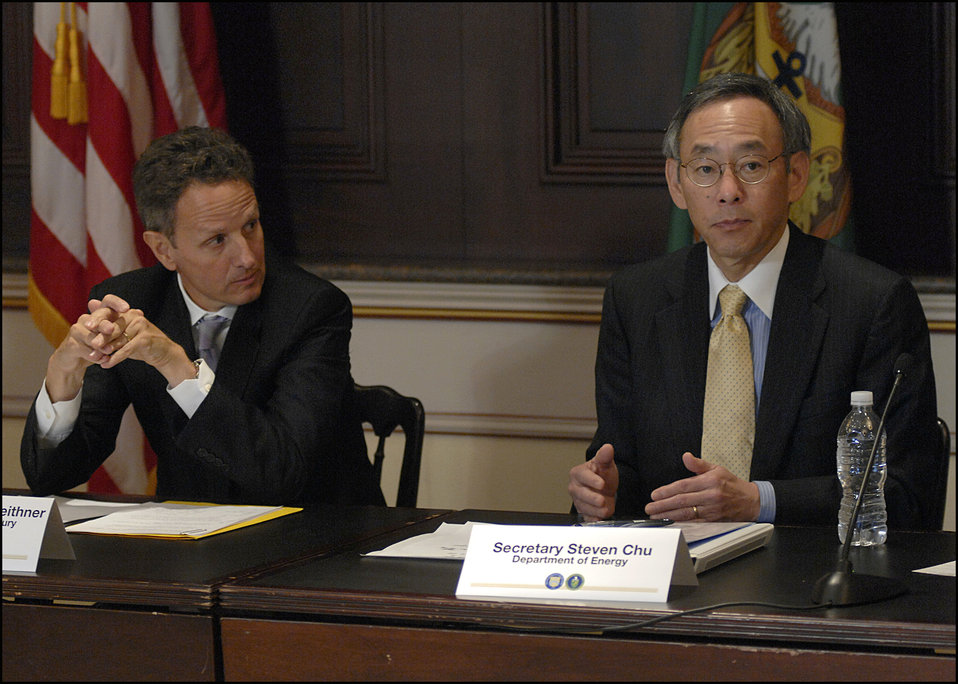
Roundtable077 1